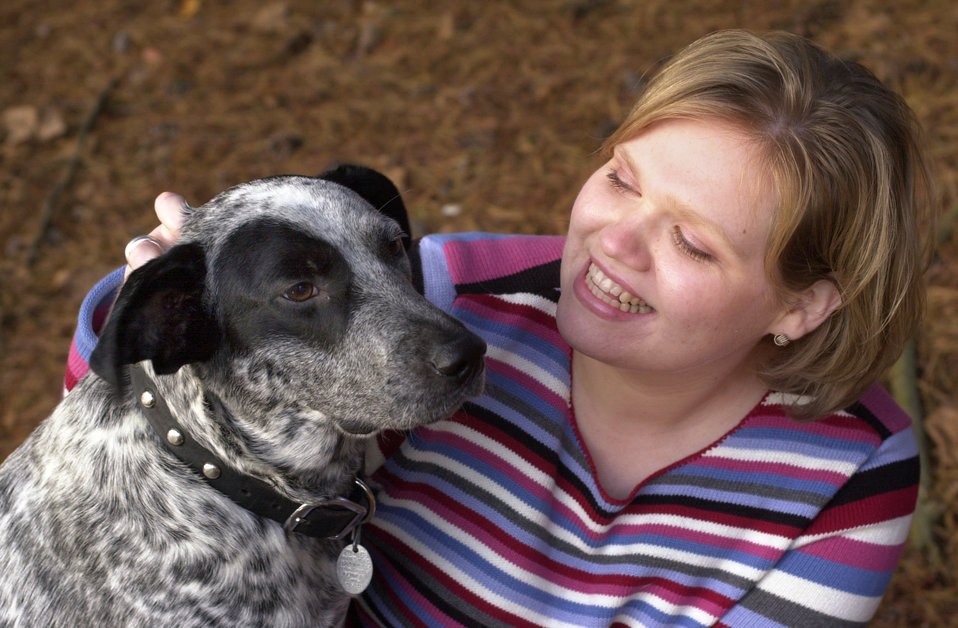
This photograph depicts an unidentified mixed breed dog, sometimes referred to as a mutt, seated along side its master. Note the docile, relaxed disposition of this pet, which is ideal when thinking about adding a canine family member.The CDC advises that you consider the following before you decide to own a dog: